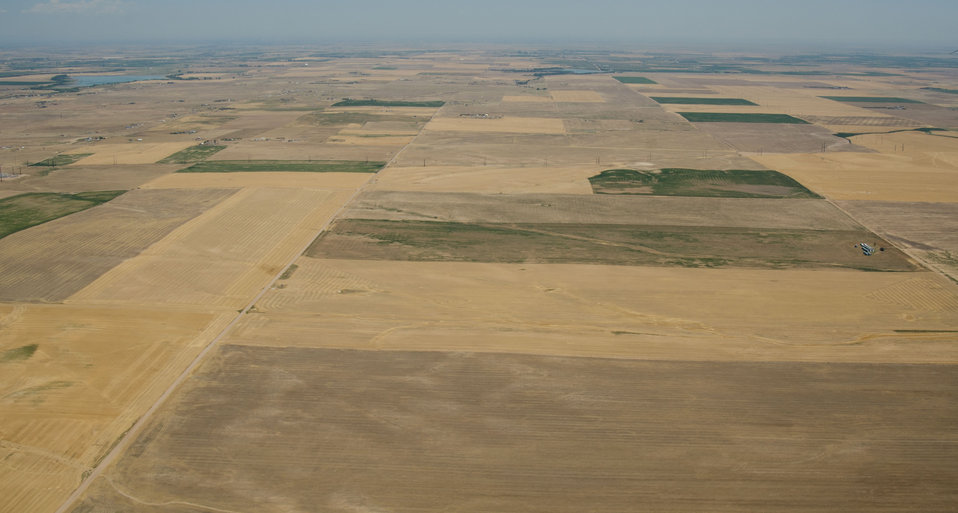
Aerial views of drought affected Colorado farm lands, 71 miles east of Denver, Colorado on Saturday, July 21, 2012.